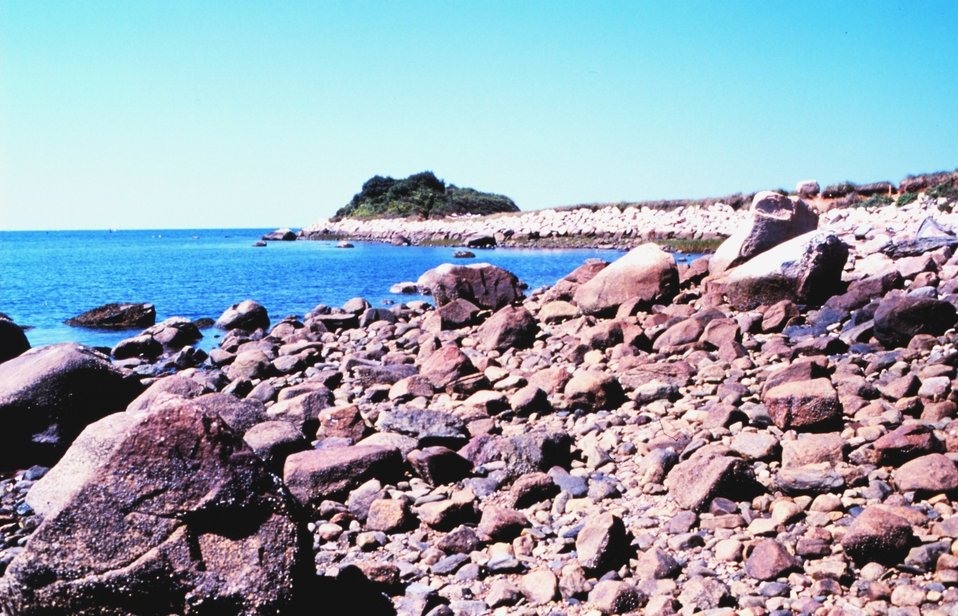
The Knob, Woods Hole